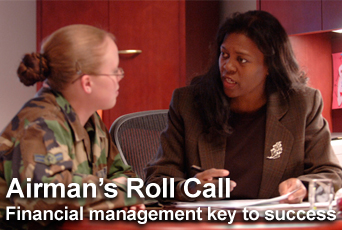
Personal financial management

This week's Airman's Roll Call focuses on Airmen making sound financial decisions and taking control of their personal financial management.